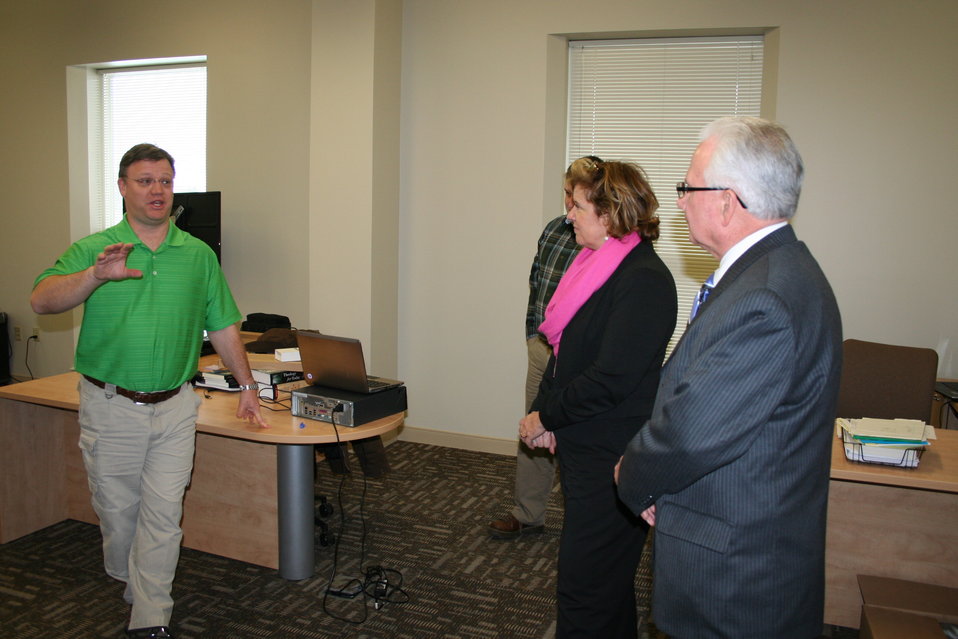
KHIC 3-6-13

Kentucky Rural Health Information Technology (KRHIT) Jeff Campbell explains to U.S. Department of Agriculture (USDA) Rural Development (RD) Rural Business- Cooperative Service (RBCS) agency Acting Administrator Lillian Salerno and Kentucky State Director Tom Fern how the innovation center is benefitting his health-industry related business in London, KY on Mar. 6, 2013.